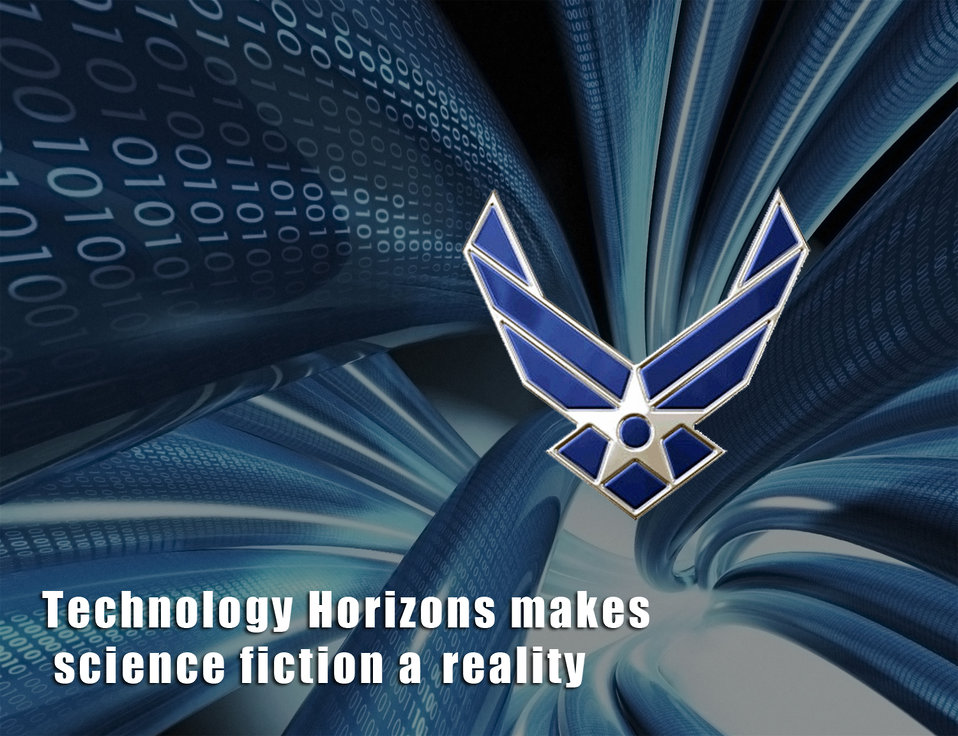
Air Force's 'Technology Horizons' makes science fiction a reality